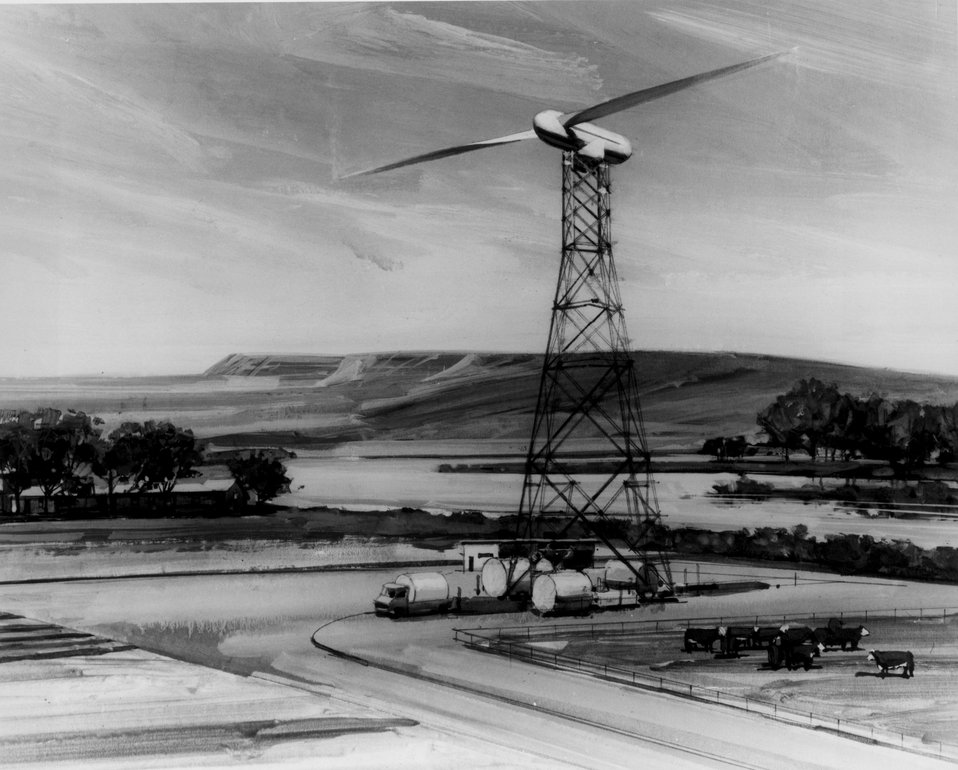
FOR A MORE ABUNDANT HARVEST...A compact, automatic plant powered by a windmill to produce nitrogen fertilizer from air and water, both essentially free resources, is illustrated in this artist's concept. c. 1977